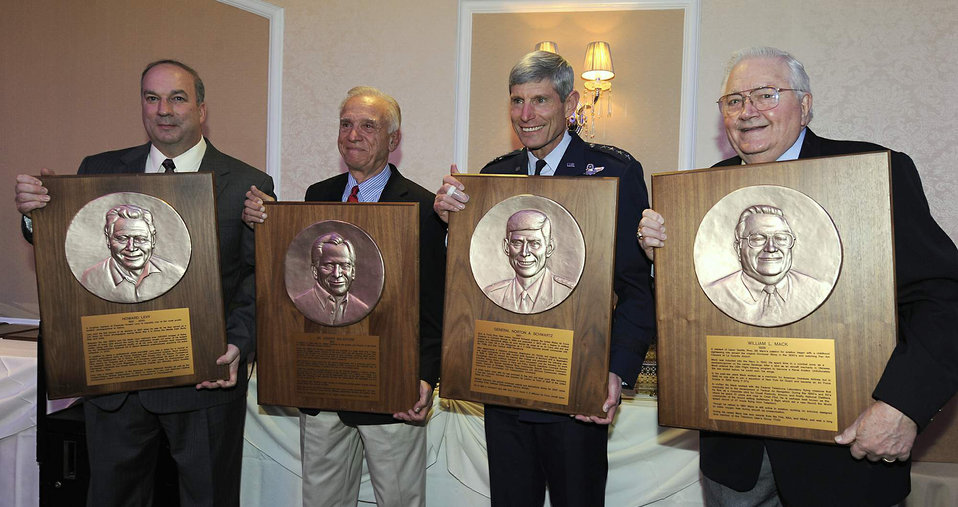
New Jersey Aviation Hall of Fame

Air Force Chief of Staff Gen. Norton Schwartz poses for a photograph with three other honorees May 11, 2011, during an induction ceremony into the New Jersey Aviation Hall of Fame in Teterboro, N.J. Joining the general were, from left, Glenn Stott, accepting on behalf of Howard Levy, an aviation photographer; Dr. Joseph Salvatore, founder of the Naval Air Station Wildwood Museum, the largest aviation museum in New Jersey; and William Mack, a jet speed record-setter and avionics designer. General Schwartz is a native of Toms River, N.J.